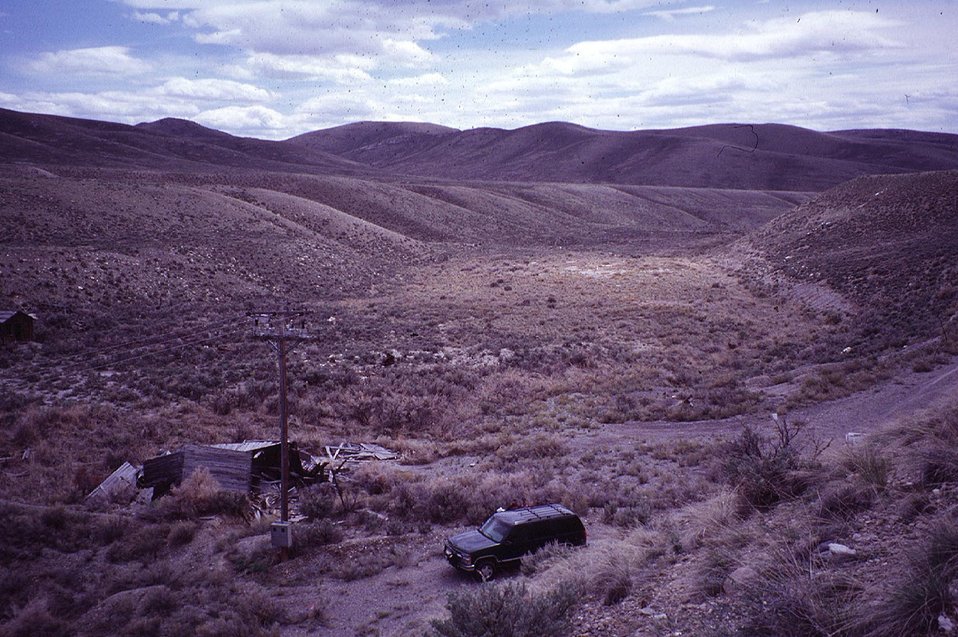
North Creek Millsite, before clean-up Southeastern Idaho near Arco Idaho Falls Field Office USRD Upper Snake River District